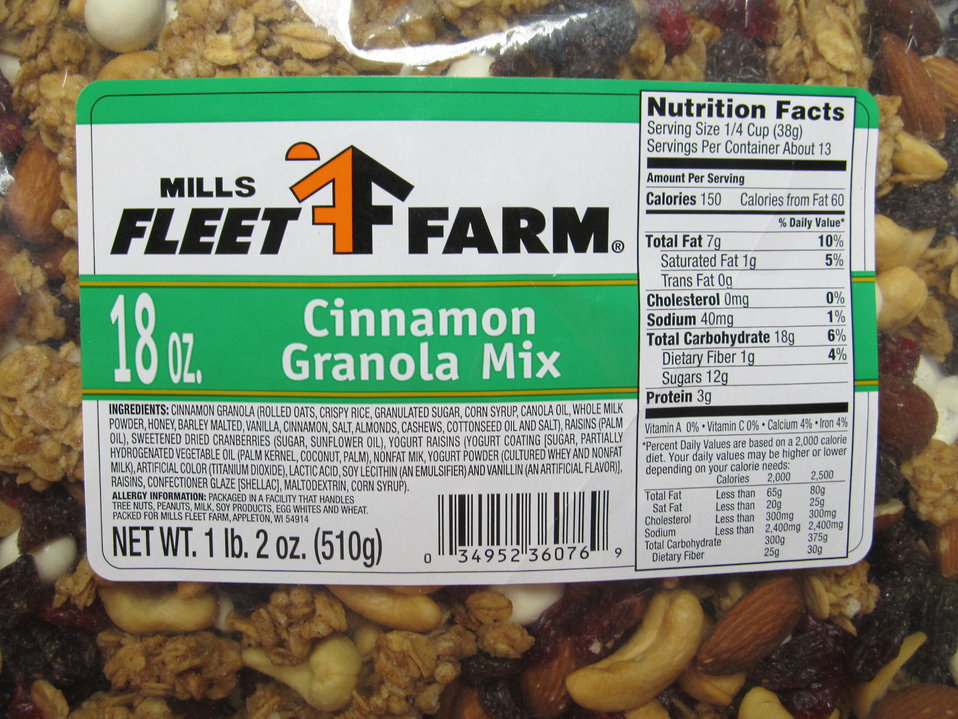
RECALLED - Yogurt Raisins and Granola Mix

December 22, 2011 - Eillien's Candies, Inc. Issues a Voluntary Recall of Select Candy Items Due to Possible Health Risk.